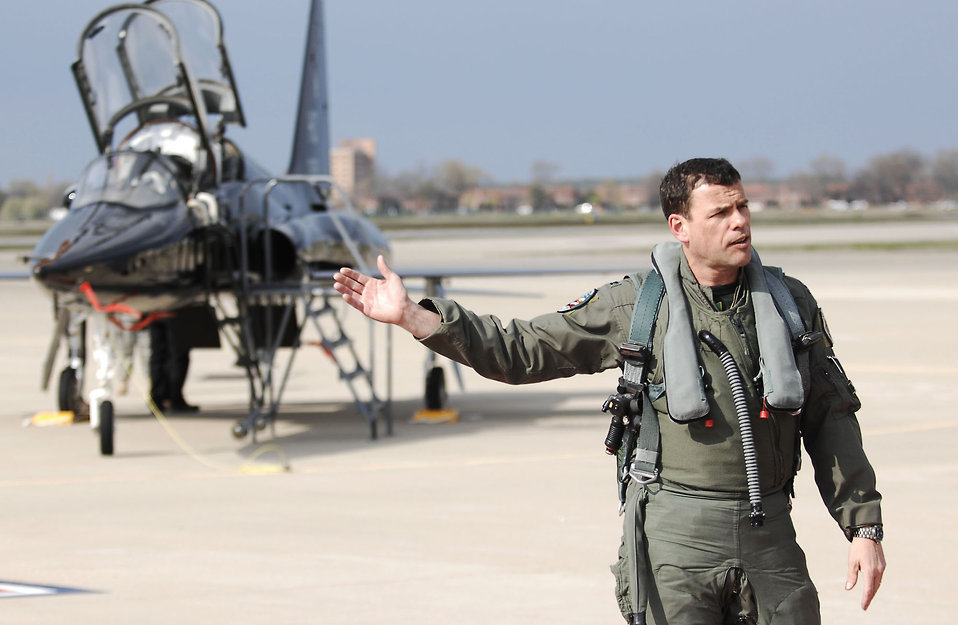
T-38

Col. Matthew Molloy presents a T-38 Talon April 1, 2011, at Langley Air Force Base, Va. The T-38, from Holloman AFB, N.M., is here for six months to help train F-22 Raptor pilots. Colonel Molloy is the 1st FW commander.